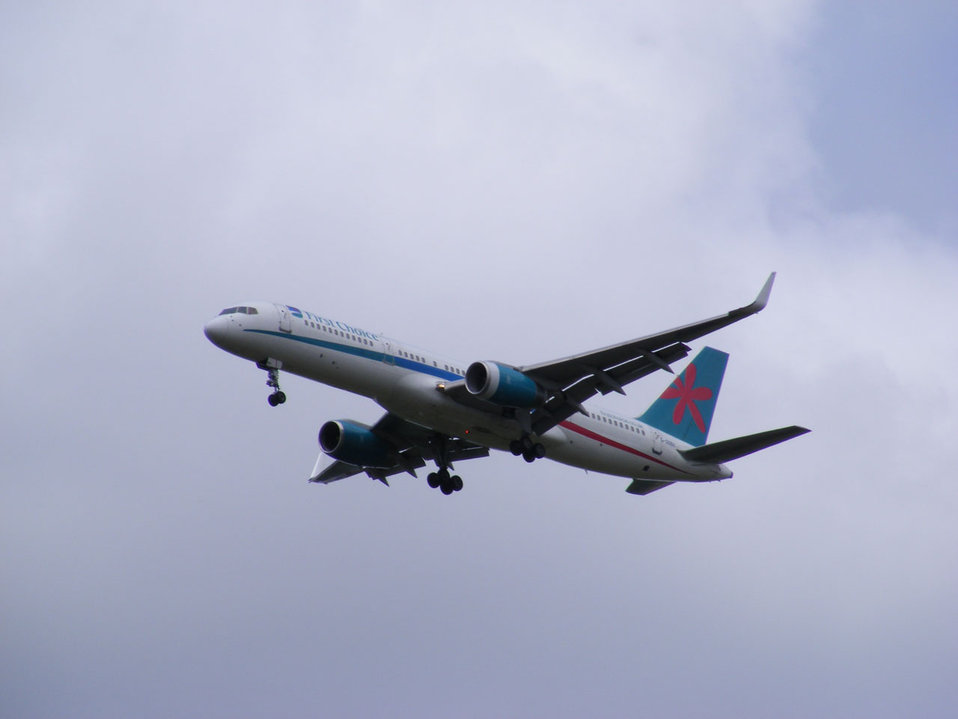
Fasten seat belts

Landing approach.